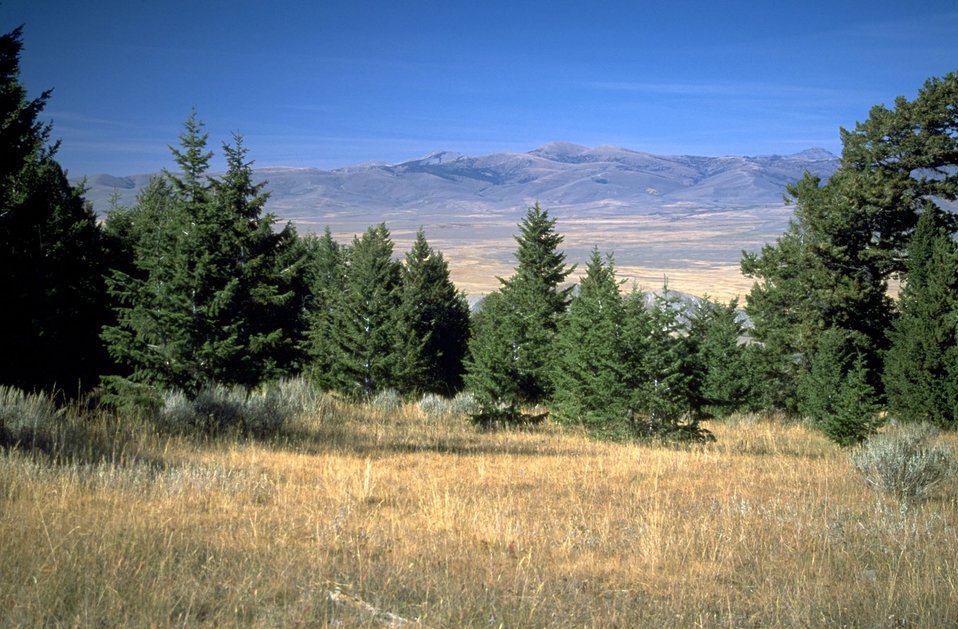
View of Centennial Valley Red Rock Lake from the Centennial Mountains